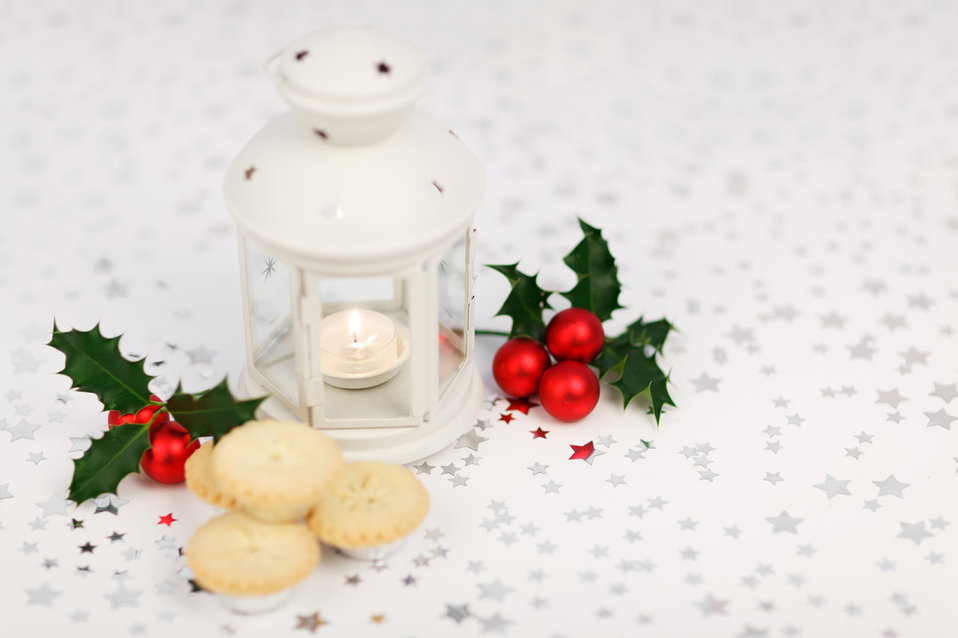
Lantern, holly and mince pies on starry background.